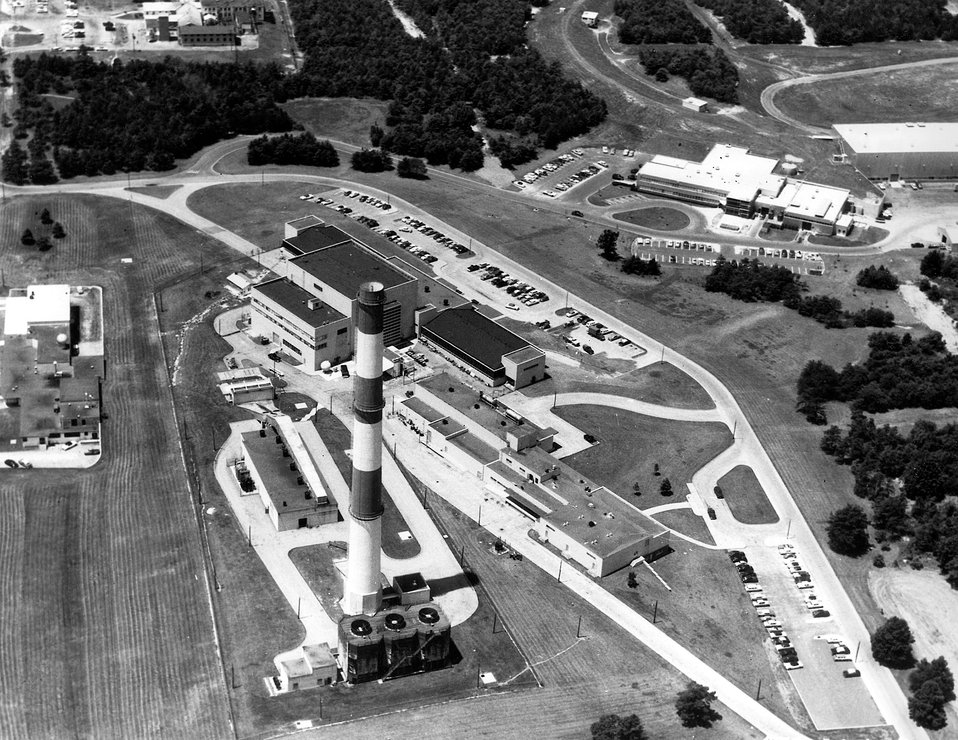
Aerial view of the Brookhaven National Laboratory reactor complex with stack and fan houses in left foreground, and Hot Laboratory in the right foreground. c. 1959